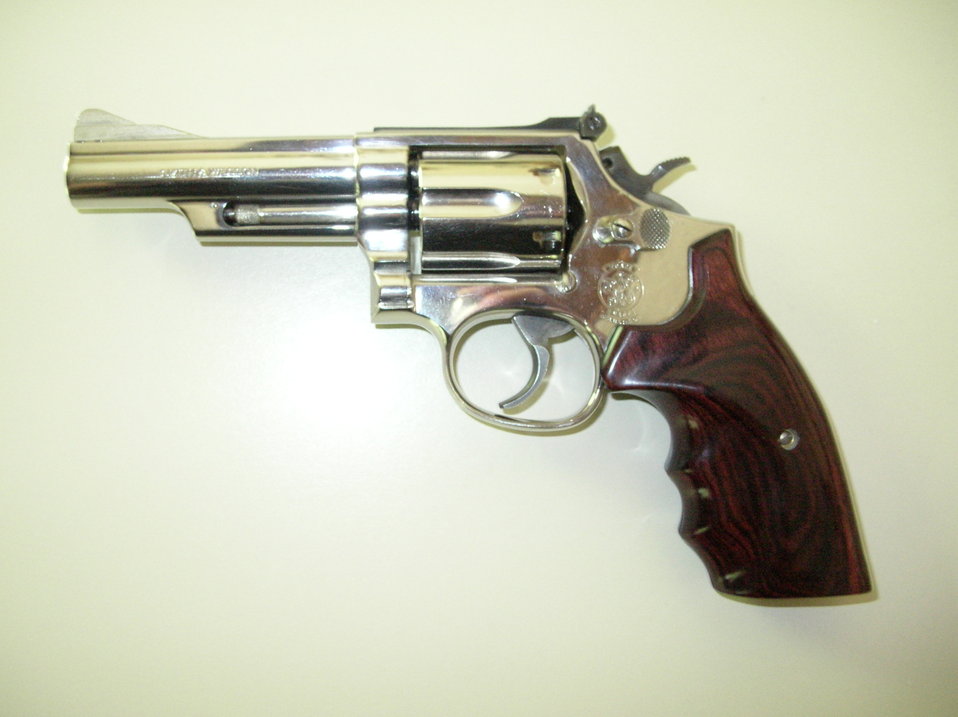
Smith & Wesson Model 19-5 .357 Magnum, 4' Barrel, Polished Nickle plated, Woodgrain square grips